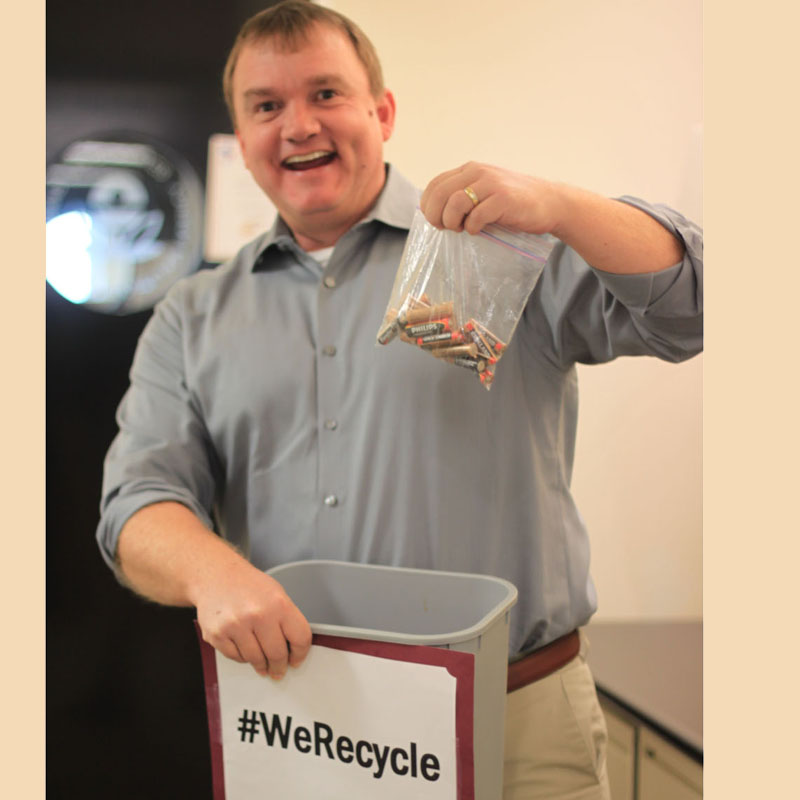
EPA Employee Michael Recycles

At EPA, #WeRecycle. Learn how you can too: www2.epa.gov/recycle